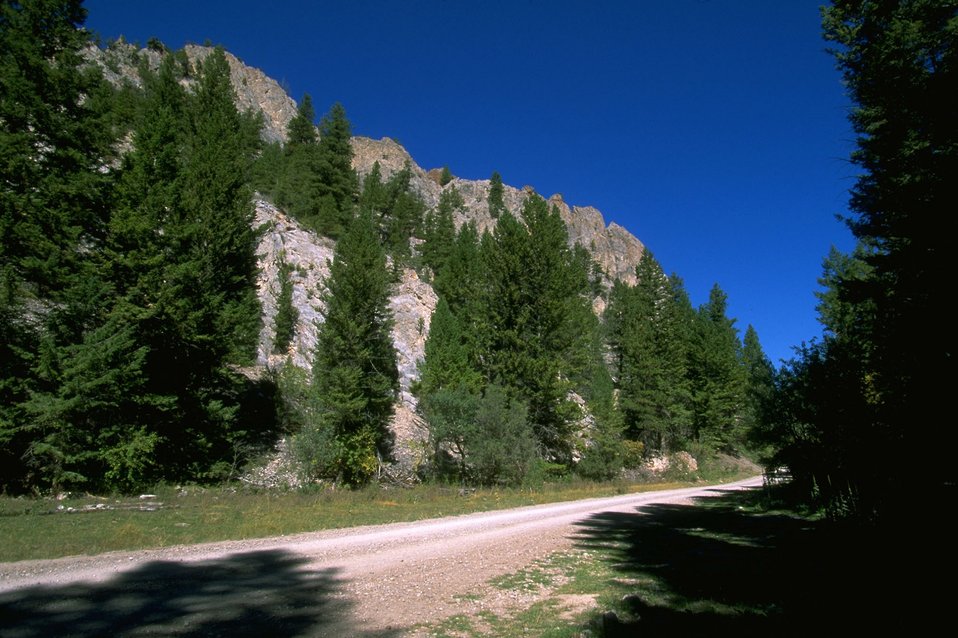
Rattler Gulch-Limestone Cliffs ACEC (area of critical environmental concern) with roadway